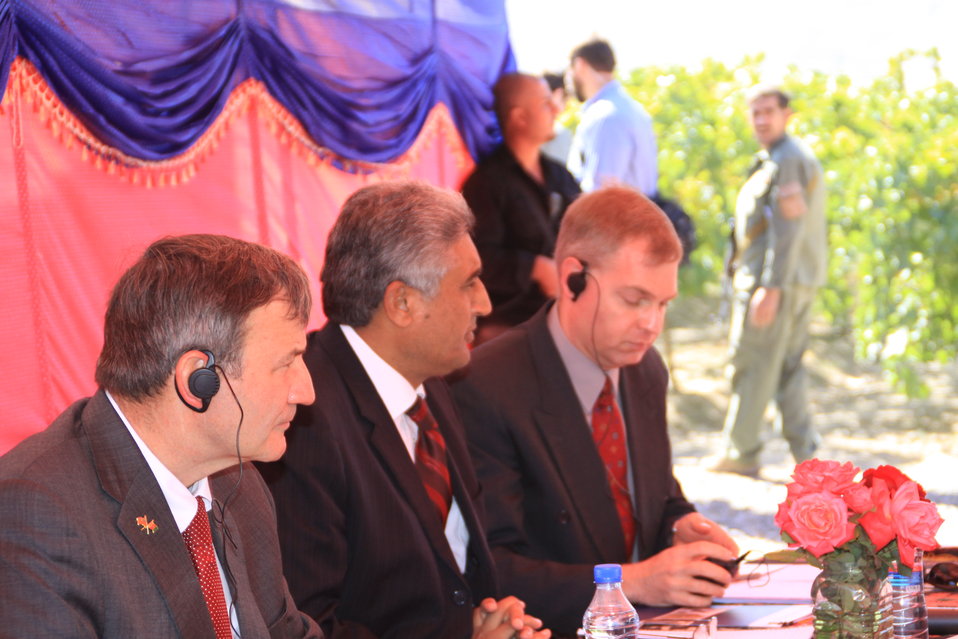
AVIPA Plus Wheat Seed Distribution 101005

US Ambassador Karl Eikenberry and USAID Acting Mission Director Kevin Brownawell joined the Minister of Agriculture, Irrigation and Livestock, H.E. Minister Mohammed Rahimi in signing a Memorandum of Understanding and distributing vouchers to area farmers for wheat and fertilizer.

US Ambassador Karl Eikenberry and USAID Acting Mission Director Kevin Brownawell joined the Minister of Agriculture, Irrigation and Livestock, H.E. Minister Mohammed Rahimi in signing a Memorandum of Understanding and distributing vouchers to area farmers for wheat and fertilizer.